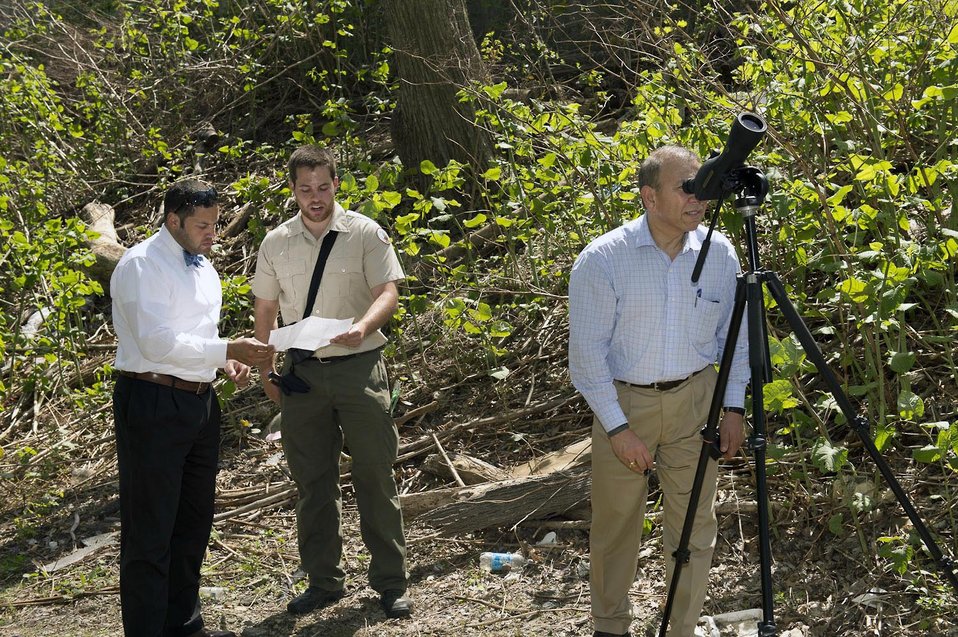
(L to R) U.S. Department of Agriculture (USDA) Animal Plant Health Inspection Service (APHIS) Marketing and Regulatory Programs (MRP) Deputy Under Secretary Gary Woordward, USDA APHIS Plant Protection and Quarantine (PPQ) Erin Abbott and USDA APHIS PPQ Deputy Administrator Osama El-Lissy are shown how they keep track of trees in Boston, MA on Monday, May 12, 2014.